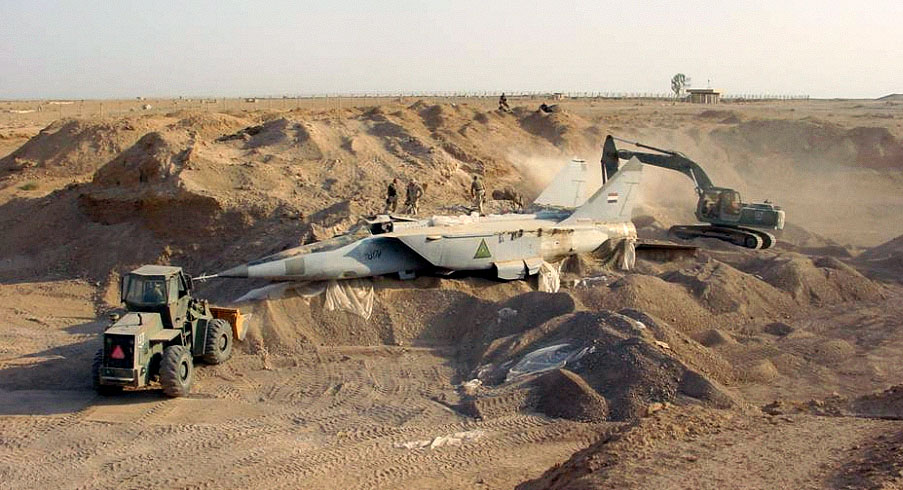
Sandy Foxbat

OPERATION IRAQI FREEDOM -- A search team discovers a MiG-25 Foxbat buried beneath the sands in Iraq. Several MiG-25 interceptors and Su-25 ground attack jets have been found buried at Al-Taqqadum air field west of Baghdad.